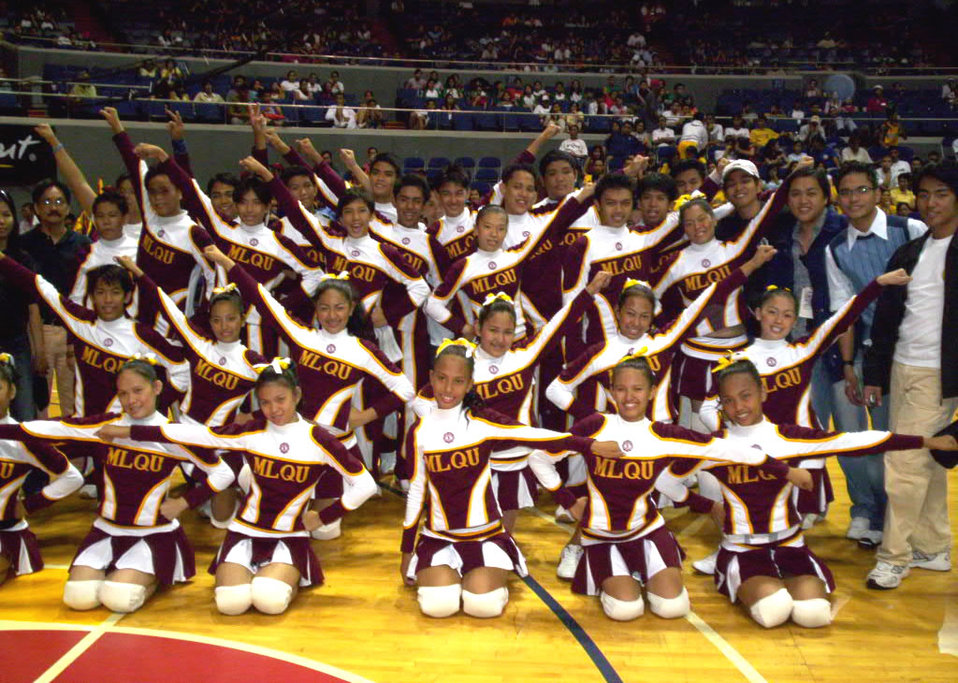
Manuel L. Quezon University cheering squad.